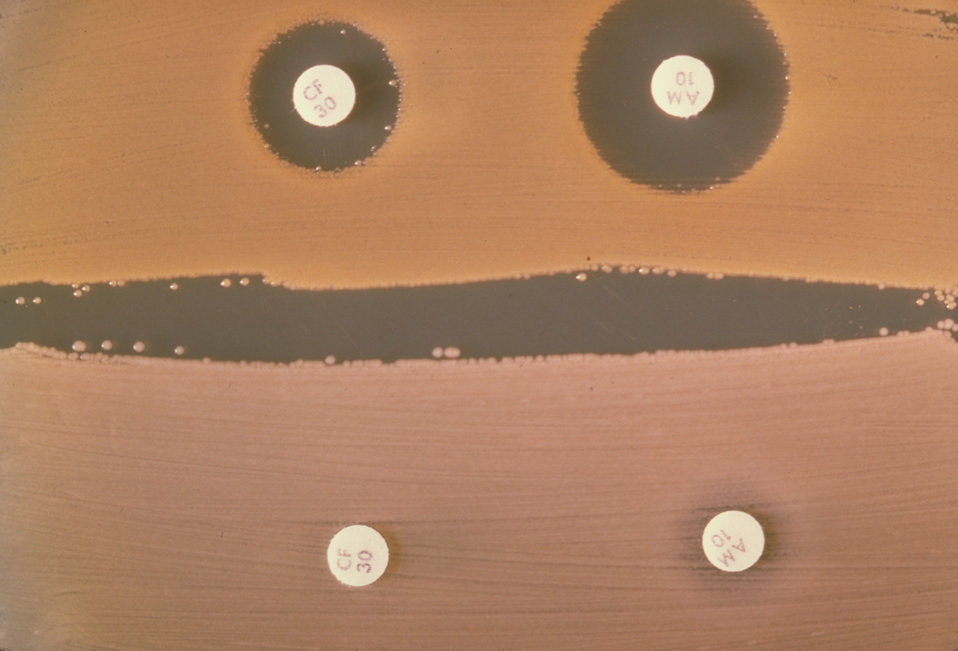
This antibiogram compares E. sakazakii sensitivity (top) to E. cloacae (bottom) to cephalothin and ampicillin.